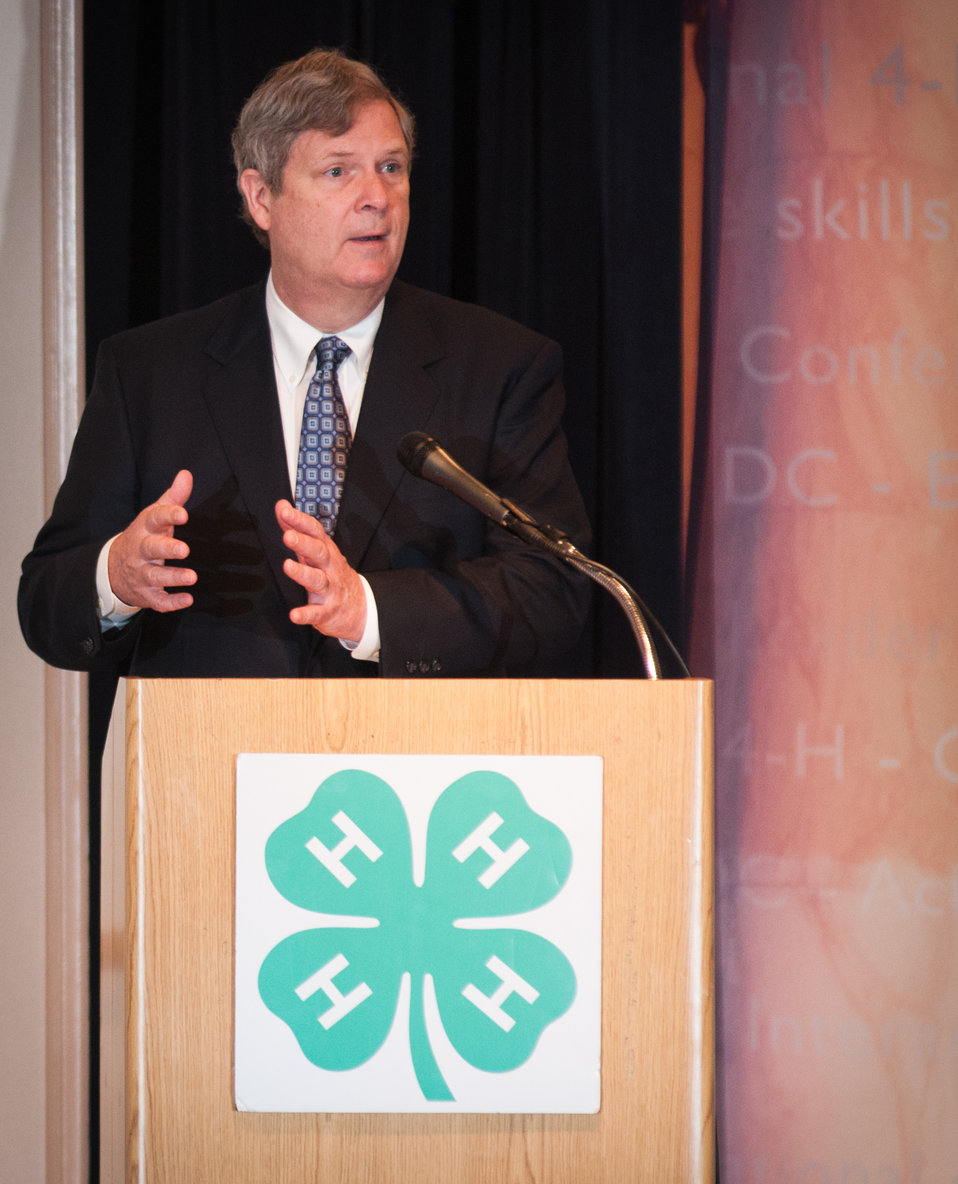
U.S. Department of Agriculture (USDA) Secretary Tom Vilsack delivers the keynote remarks to approximately 300 youth members, Extension Educators and 4-H Adult Volunteers from across the nation, as well as U.S. Territories at the 2013 National 4-H Conference, on Monday, April 8, 2013 in Chevy Chase, MD. Also speaking at the event is Agriculture Departmental Management Office of Advocacy and Outreach Director Carolyn Parker and National Institute of Food and Agriculture Director Dr. Sonny Ramaswamy. The youth delegates are in grades 10-12 (15-19 years old). The purpose of the conference is to 1) engage 4-H youth in personal development experiences that will increase knowledge, resources, and skills; 2) discuss topics affecting youth and 4-H programming nationwide; and 3) empower and mobilize 4-H youth to create positive social change in their communities in a meaningful and genuine way. The conference also reinforces the rich history of 4-H and its valuable tie to USDA, Cooperative Extension and the Land-Grant University System.